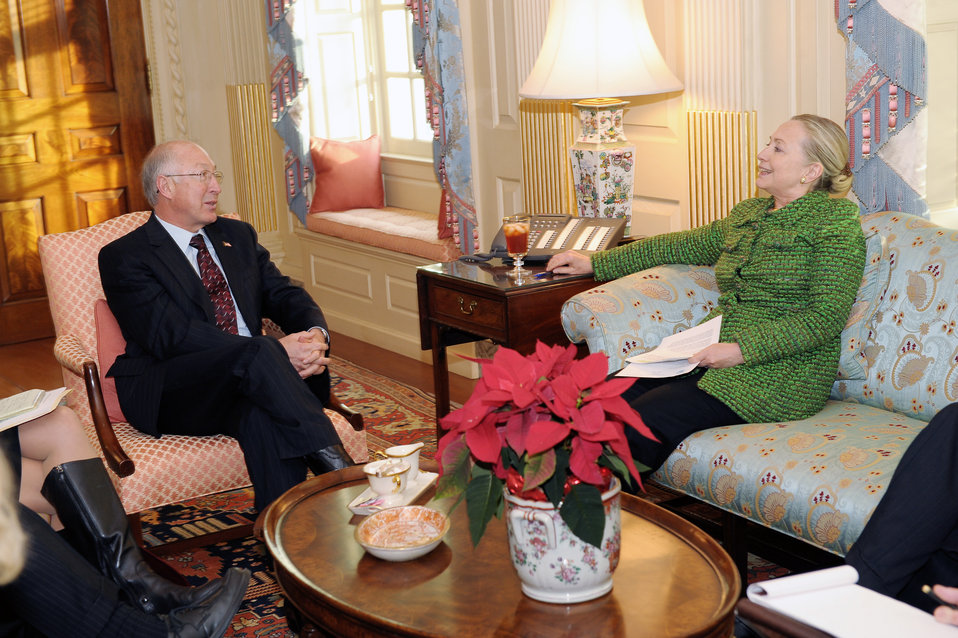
Secretary Clinton Meets With Secretary Salazar

U.S. Secretary of State Hillary Rodham Clinton meets with Secretary of the Interior Ken Salazar at the U.S. Department of State in Washington, D.C., on December 20, 2011.